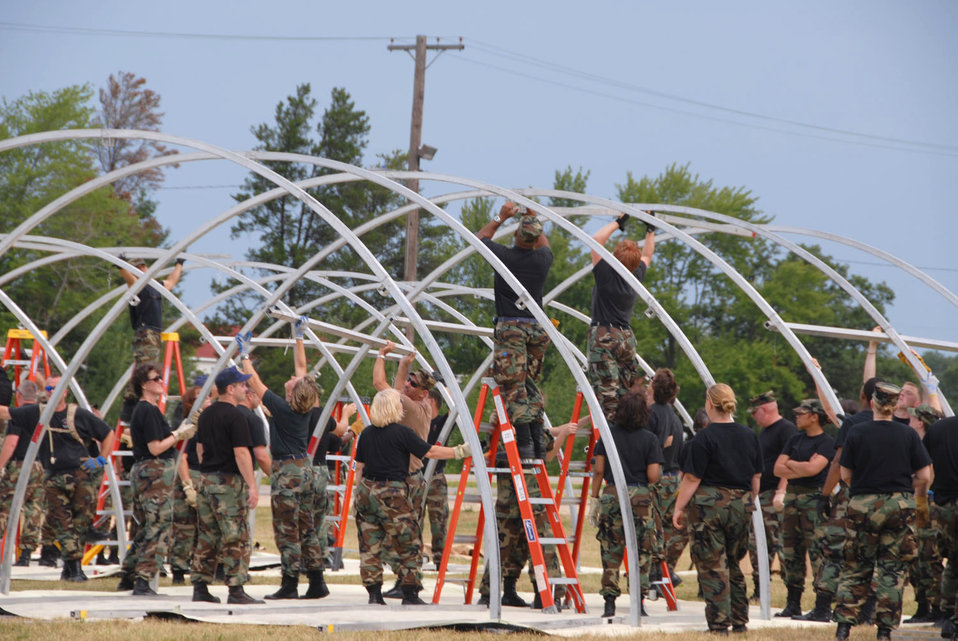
Guard, Reserve medics gear up at Patriot '06

A combined team of Reserve and Guard medics set up a tent as part of their Expeditionary Medical Support System certification training at Ft. McCoy, Wisc., during Patriot '06, an Air National Guard-led exercise.